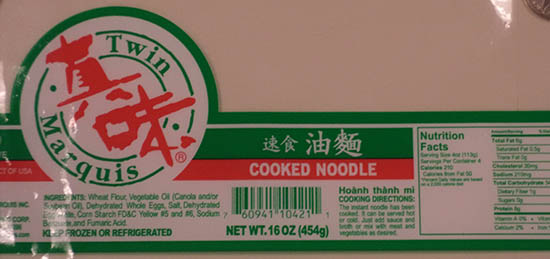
RECALLED – Cooked Noodle and Lo Mein Noodle

March 03, 2014 – Product Recall – Twin Marquis, Inc Issues Allergy Alert on Undeclared Milk in Specific Lots of its Cooked Noodle and Lo Mein Noodle.